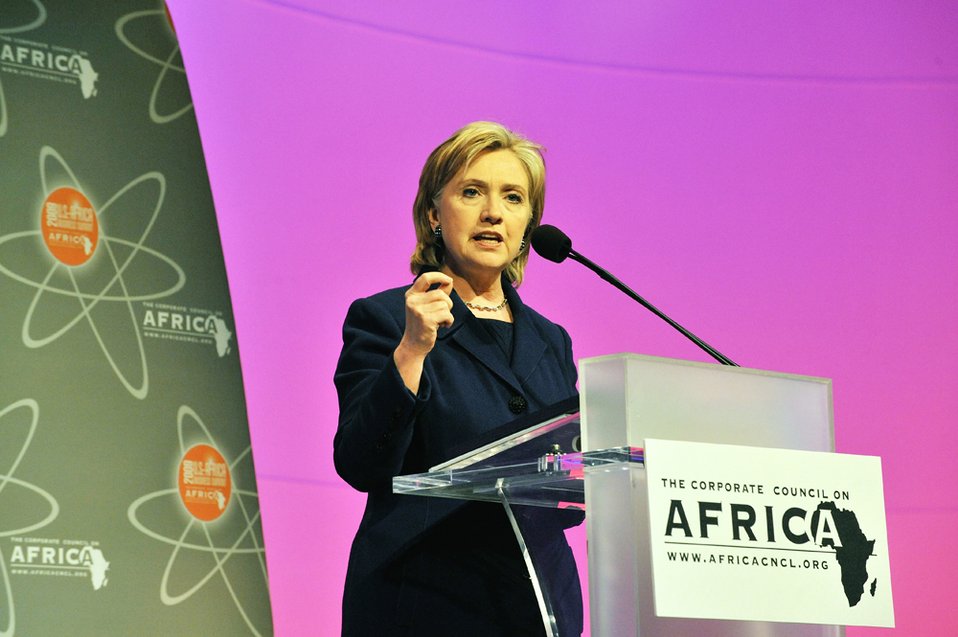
Secretary Clinton Speaks at the Corporate Council on U.S.-Africa Business Summit

U.S. Secretary of State Hillary Rodham Clinton speaks at the Corporate Council on Africa's Seventh Biennial U.S.-Africa Business Summit in Washington, D.C., October 1, 2010.